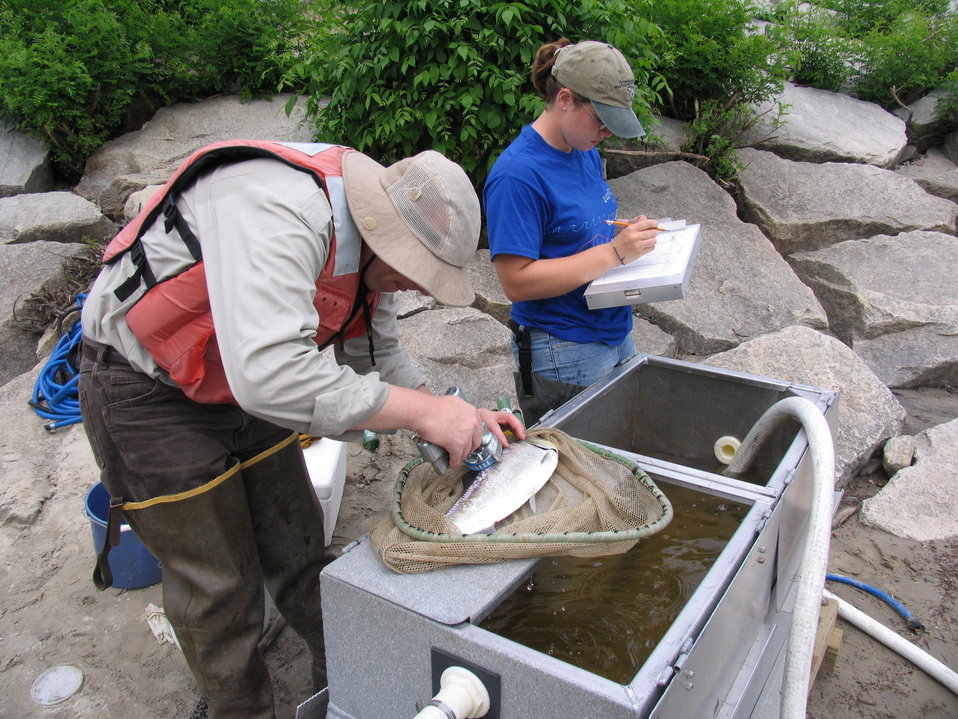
Merrimack shad sampling at the Central New England Fishery Resource Office.